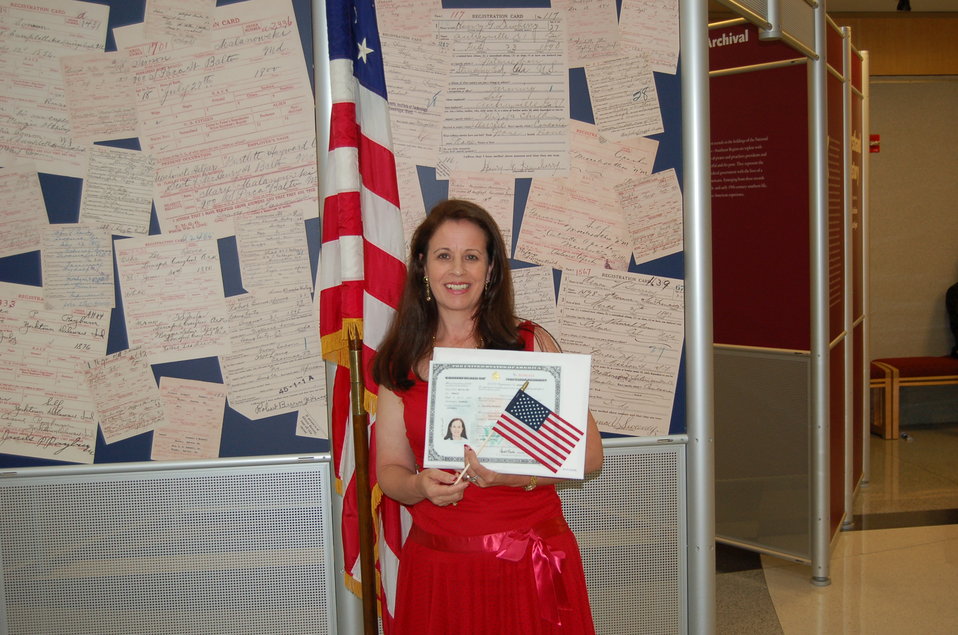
New Citizens